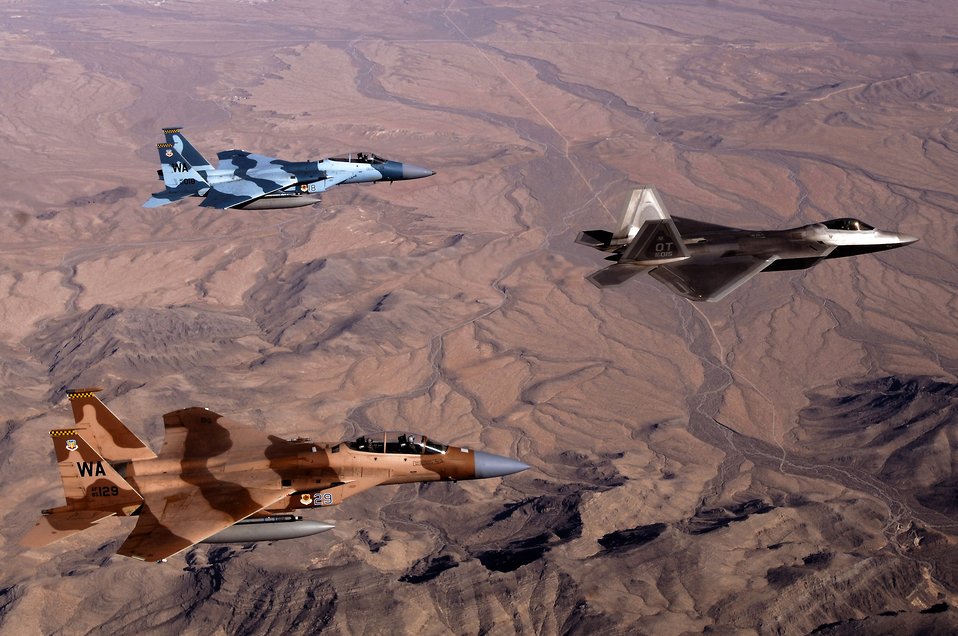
Aggressors on the prowl

Two F-15 Eagles fly in formation with an F-22 Raptor April 24 during a support mission near Nellis Air Force Base, Nev. The F-15s act as